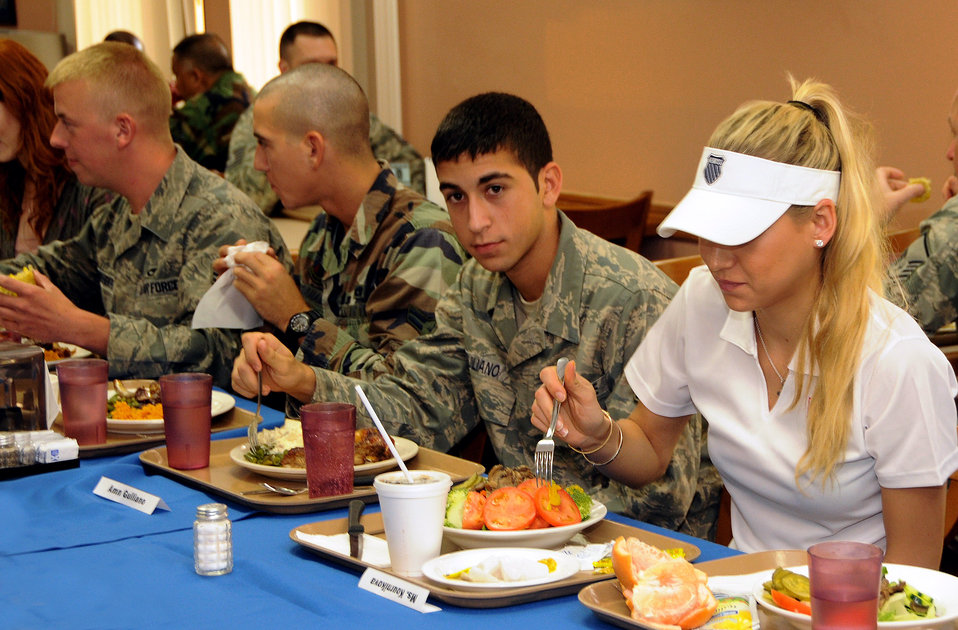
Anna Kournikova visits Andersen

Anna Kournikova dines with Airmen Oct. 29 at the Magellan Inn at Andersen Air Force Base, Guam. Ms. Kournikova signed autographs along with a photo opportunity after the meal. Her tour was sponsored by the USO to boost morale of the military members on Guam.